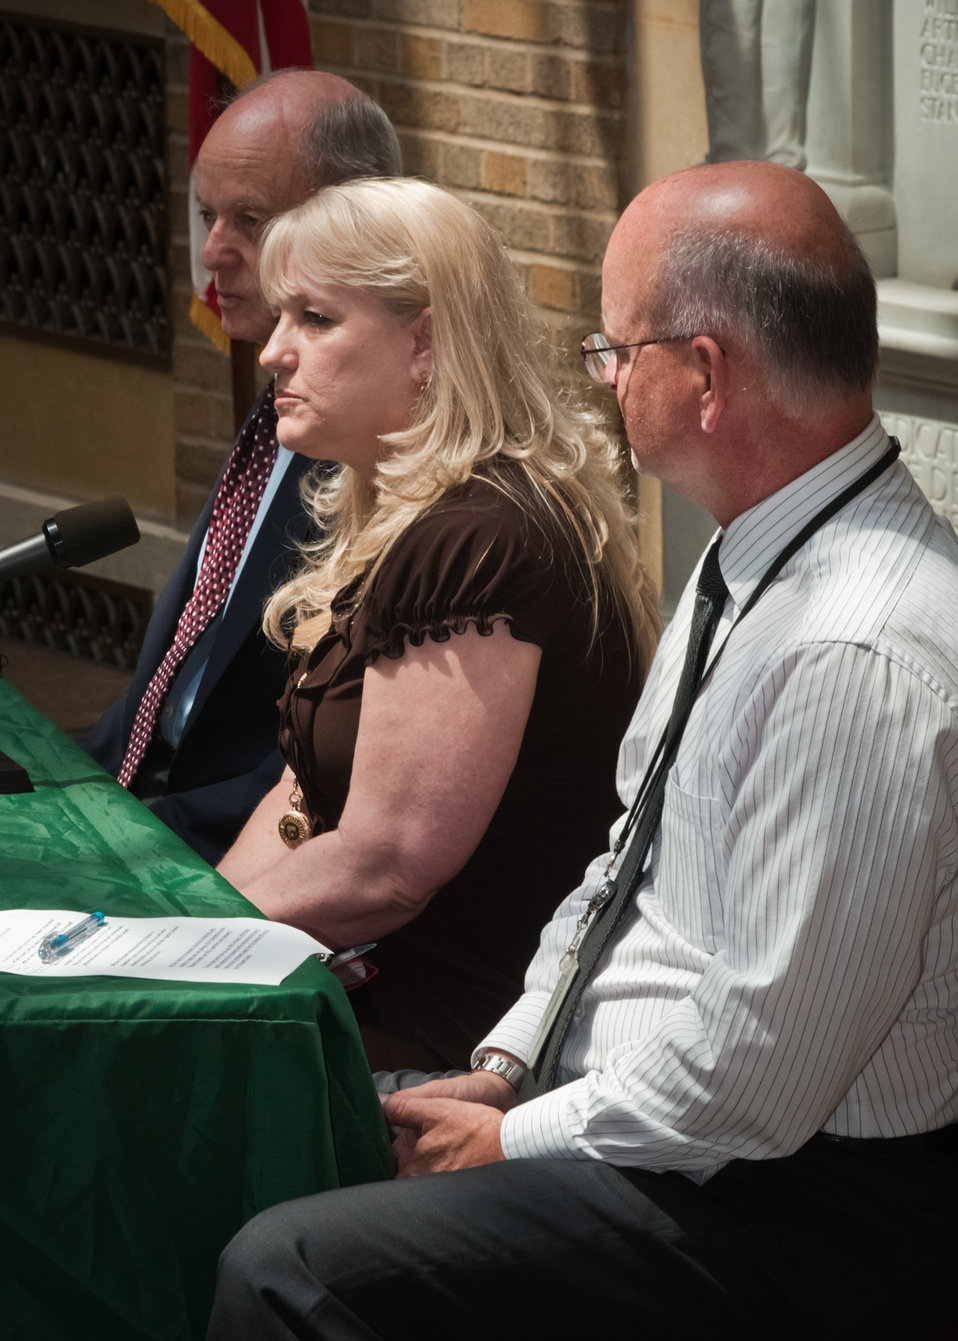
From left: Morris Tate, Director for Business Services, Office of Operations, Debra Arnold, Rural Development and President, AFSCME Union Local 3870 (USDA) and Owen Unangst, Director, Innovations and Emerging Technologies, Office of the Chief Information Officer listen to questions from employees during a “Telework Program Party/Brown Bag” event on the patio of the Jamie Whitten Building of United States Department of Agriculture, in Washington, DC, on Tuesday, June 7, 2011. The event included an interactive telework panel and exhibits from the field of telework, telecommuting and mobile work environments. The event was open to all USDA employees, supervisors, managers, human resources staff and USDA telework program coordinators.